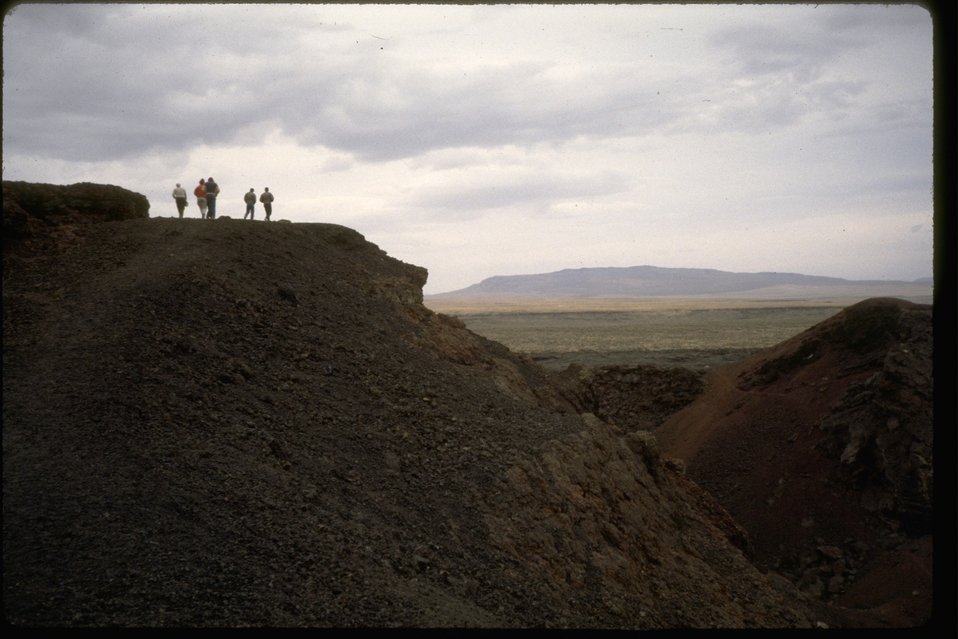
Long shot of canyon ridge with people looking out onto the prairie at Jordan Craters Wilderness Study Area. OR 3-128